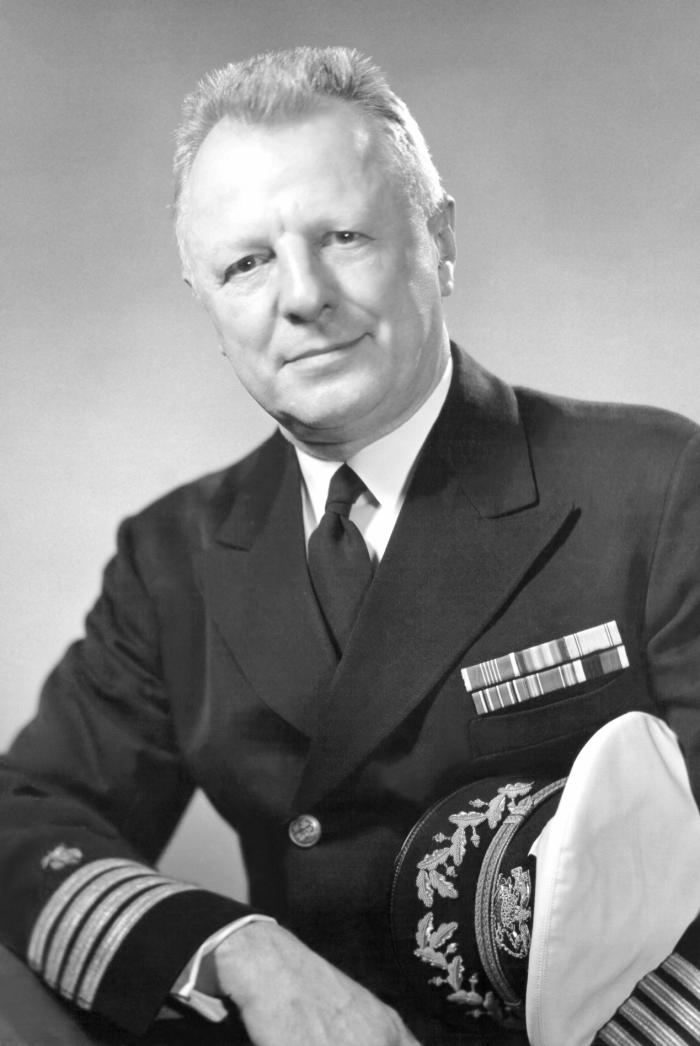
H. Trendley Dean, D.D.S

This is a photograph of H. Trendley Dean, D.D.S, who demonstrated the benefits of fluoride within dentistry.